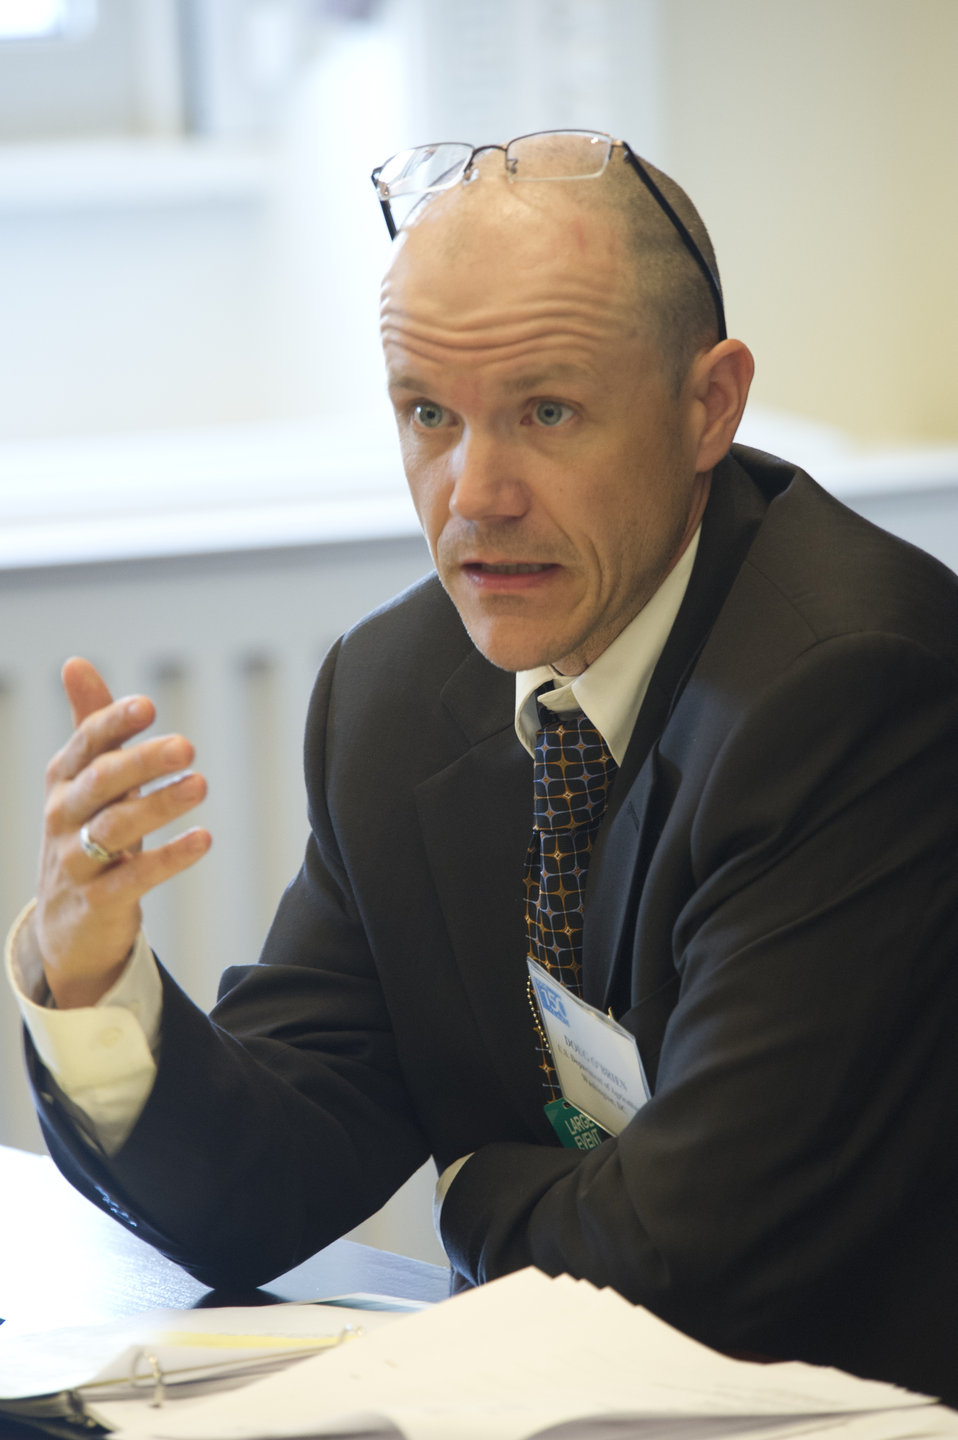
Doug O'Brien, Deputy Under Secretary for Rural Development, U.S. Department of Agriculture (USDA) speaking at the White House Forum on Regional Innovation in Rural America at the Eisenhower Executive Office Building, in Washington D.C., on Wednesday, June 13, 2012.